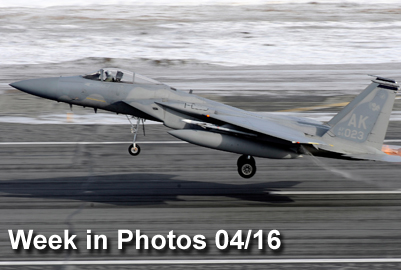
Air Force Week in Photos for April 16, 2010, highlights photos from around the Air Force. In this photo by Staff Sgt. Brian Ferguson, an F-15 Eagle from the 3rd Wing at Elmendorf Air Force Base, Alaska, takes off for a live-fire training mission over an Alaskan gunnery range.